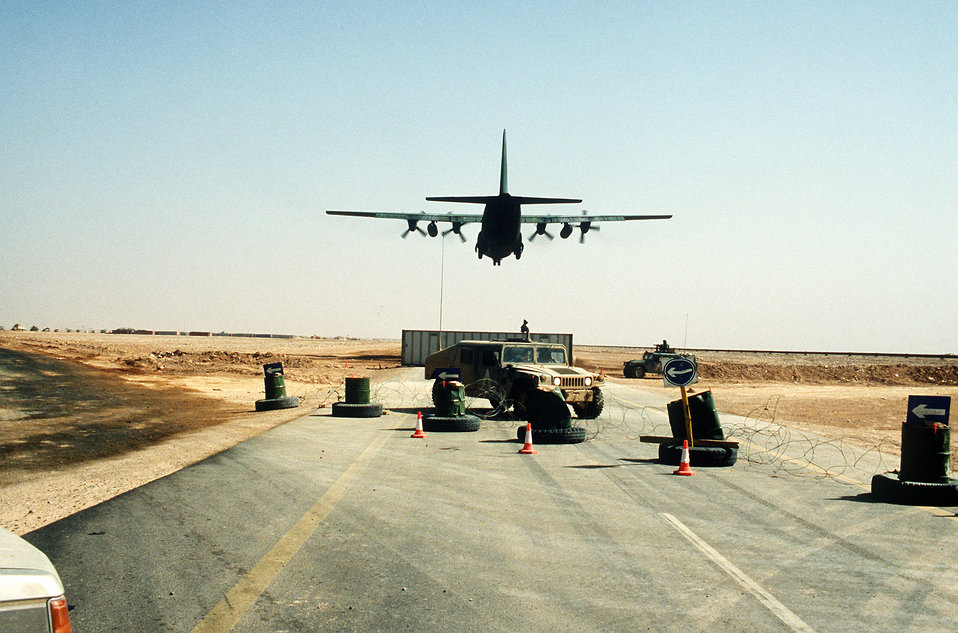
C-130 Hercules transport aircraft loaded with troops

1990's -- A C-130 Hercules transport aircraft loaded with troops from the 101st Airborne Division takes off during Operation Desert Storm. Behind the highway barricade is an M-1038 high-mobility, multipurpose wheeled vehicle.